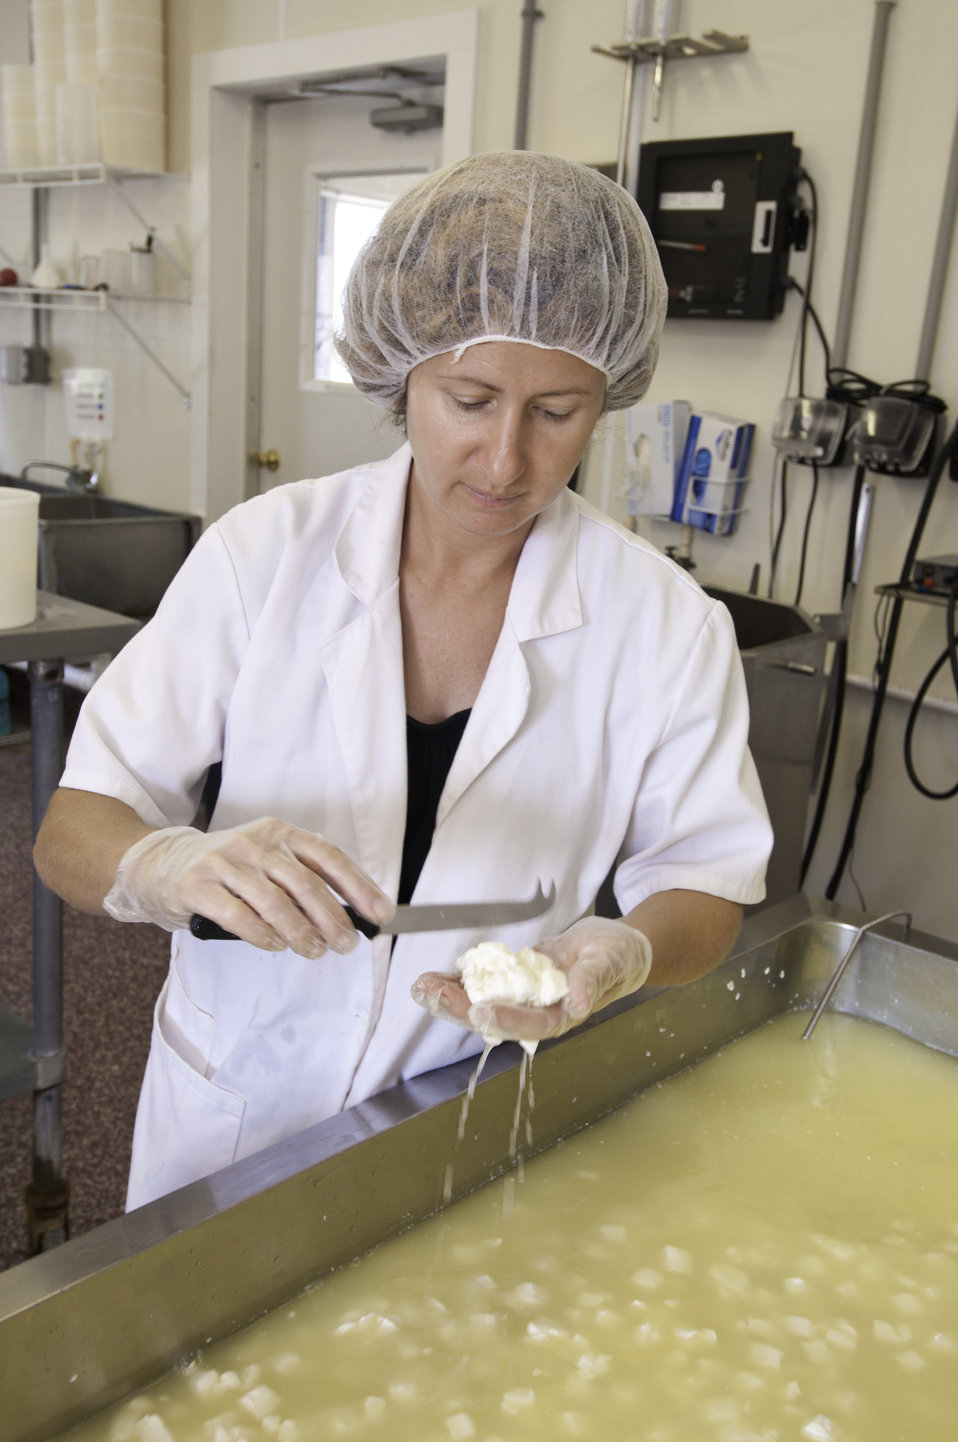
Chapel’s Country Creamery owner Holly Foster in Easton, MD has to constantly stir the milk curd of fresh raw milk so the milk curd that has been cut with curd knives does not set until whey has separated from the curd. The milk produced at the dairy is used to make artisanal cheeses. The dairy uses fresh raw milk 12-24 hours old. The milk is all-natural and contains no synthetic hormones, antibiotics, or chemical compounds. The 1150 pounds of milk in the vat will be used to make the dairy’s “Bay Blue” Cheese.